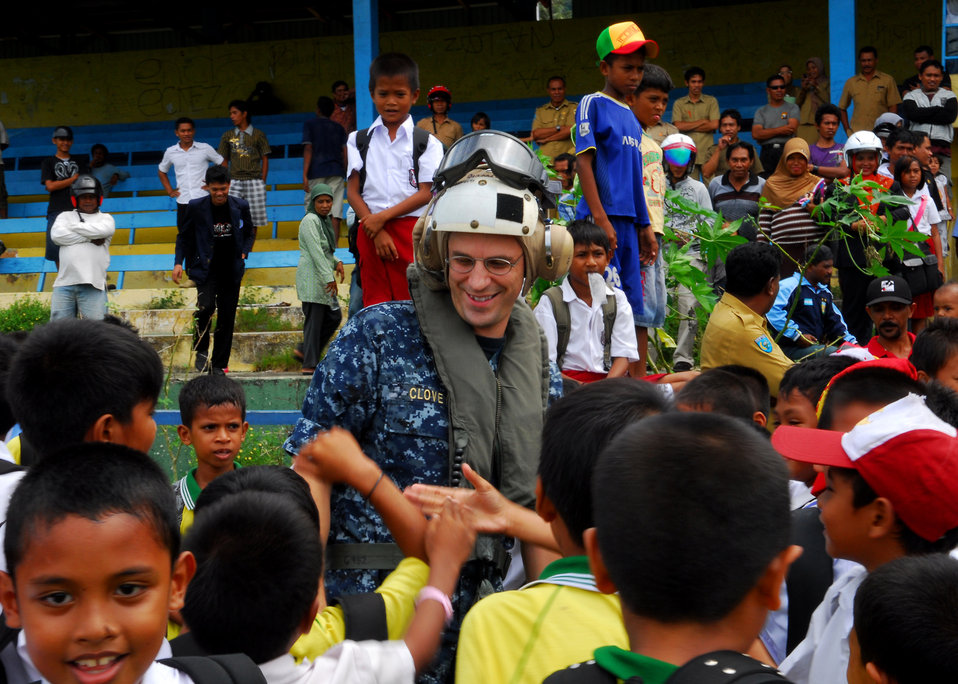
Lt. Brad Clove is greeted by local children while waiting to board a helicopter after visiting a medical civic action program in Tidore, Indonesia, on July 20, 2010. Mercy is in the North Maluku Islands conducting Pacific Partnership 2010, the fifth in a series of annual U.S. Pacific Fleet endeavors conducted in Indonesia as a disaster relief exercise aimed at strengthening regional partnerships.